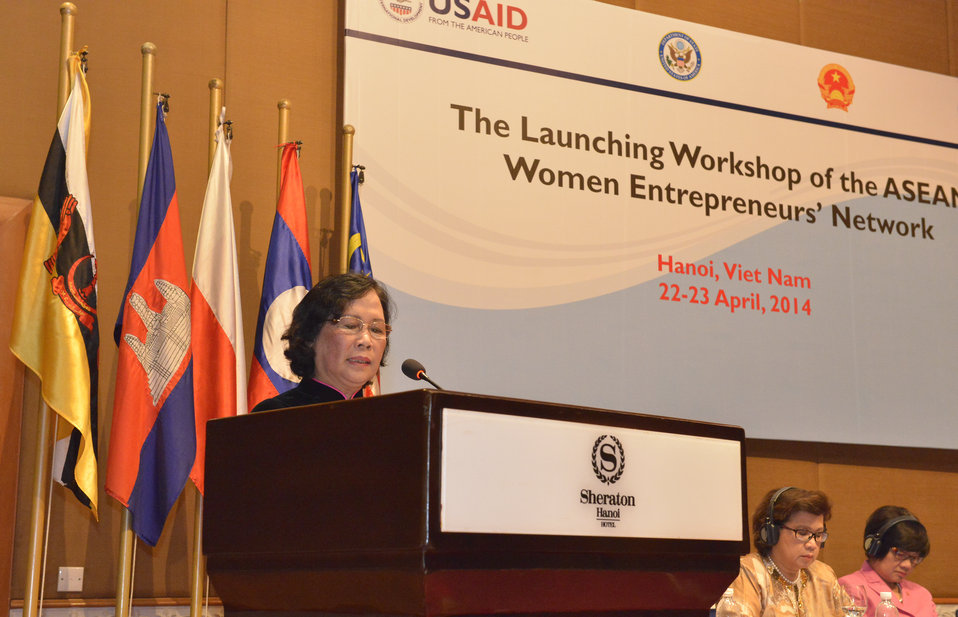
Vietnam Minister of Labor, Invalids and Social Affairs speaks at the launch of the ASEAN Women Entrepreneurs' Network

USAID/Vietnam